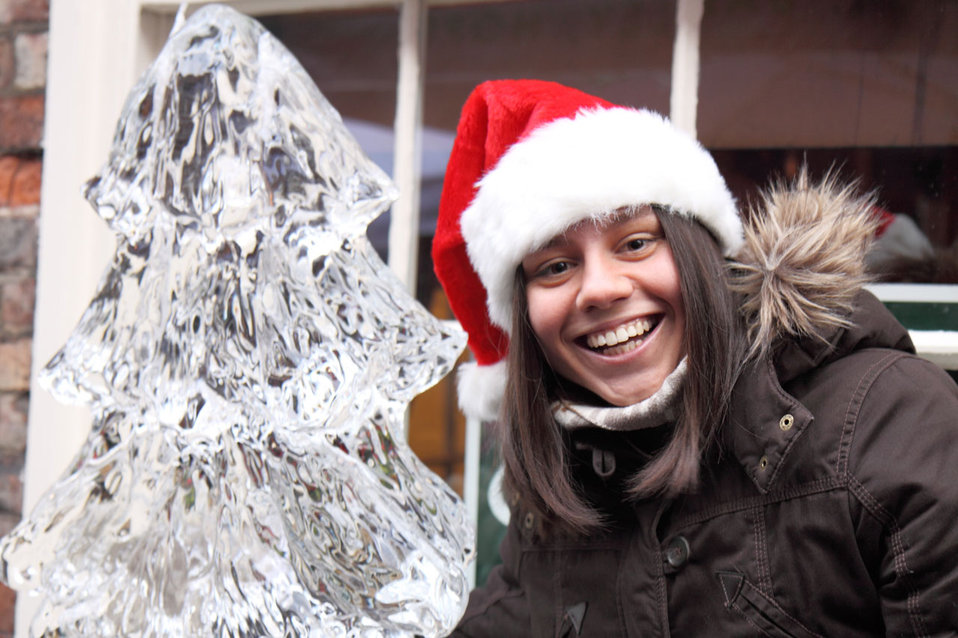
Santa girl with tree

Santa girl smiling next to icy tree.